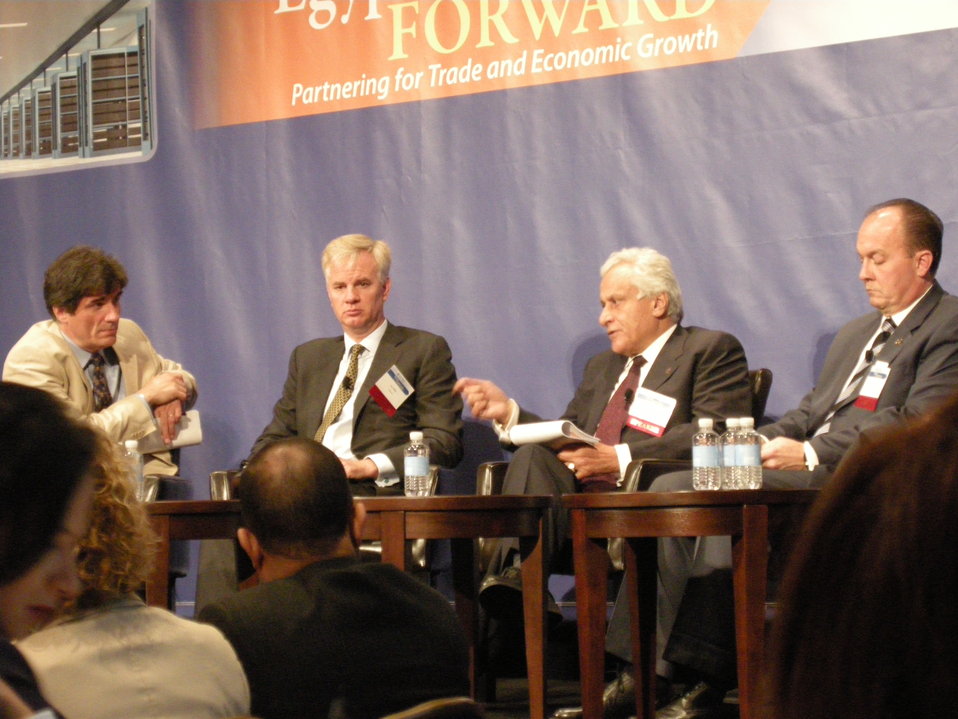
Assistant Secretary Fernandez Moderates an Executive Roundtable at the USTDA’s “Egypt: Forward Forum”

Assistant Secretary of State for Economic, Energy and Business Affairs Jose Fernandez moderates an executive roundtable at the U.S. Trade and Development Agency's (USTDA) 'Egypt: Forward Forum' in Washington, D.C., on June 27, 2011. The forum is a two-day event that brings representatives from Egypt's energy, information and communication technology, transportation, and agribusiness sectors to discuss trade, investment, and commercial opportunities with the public and private sector in the United States.